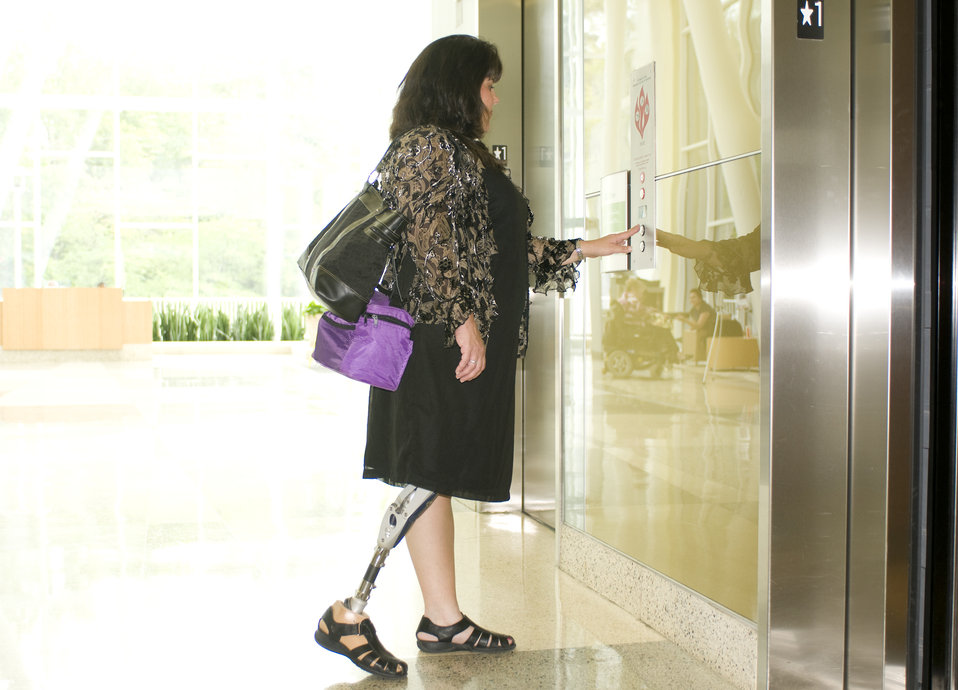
The woman pictured here was equipped with a right lower limb prosthesis, and having entered one of the Centers for Disease Control and Prevention's (CDC) campus buildings, was in the process of boarding the building's elevator, pressing the appropriate button, which would carry her to her desired destination.